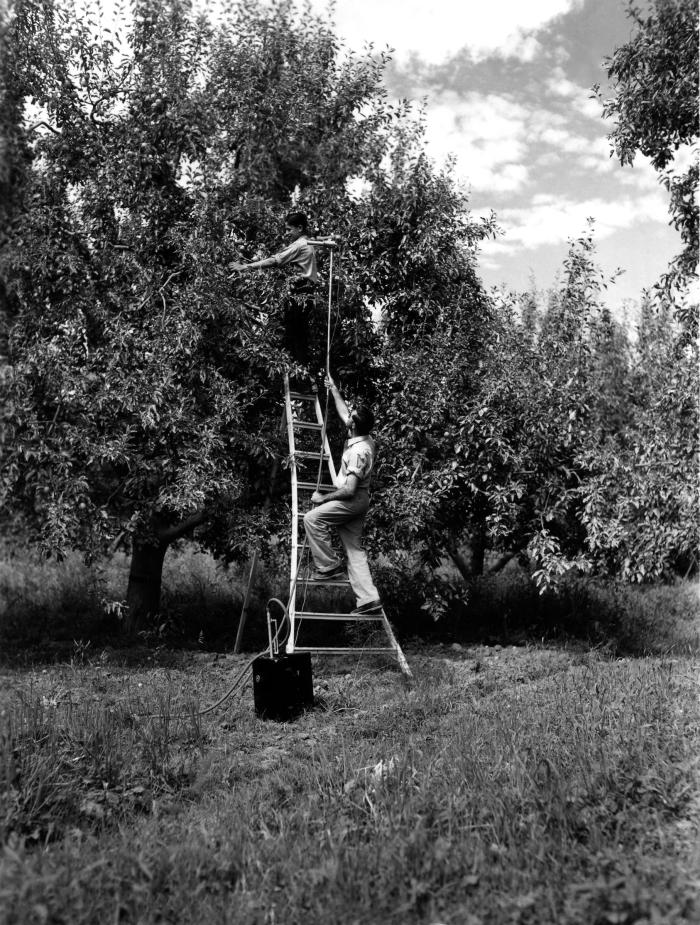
This 1947 historical photograph was provided by the Center for Disease Control's (CDC), National Institute for Occupational Safety and Health (NIOSH). The image depicted an industrial hygienist using a flow meter device to sample the air in the breathing zone of a fruit picker for residual pesticides. The apple orchard was located in Washington State. Activities such as this need stringent oversight by a regulating body such as NIOSH, which would make the health and welfare of such workers a paramount concern. Evidence suggesting the presence of workplace air contaminants, acquired in this manner, helped to forge the rules and regulations to which industries must abide in order to create a healthier workplace environment for those who must inhabit such places on a daily, longterm basis, without having to suffer the consequences brought on by pollutant inhalation.